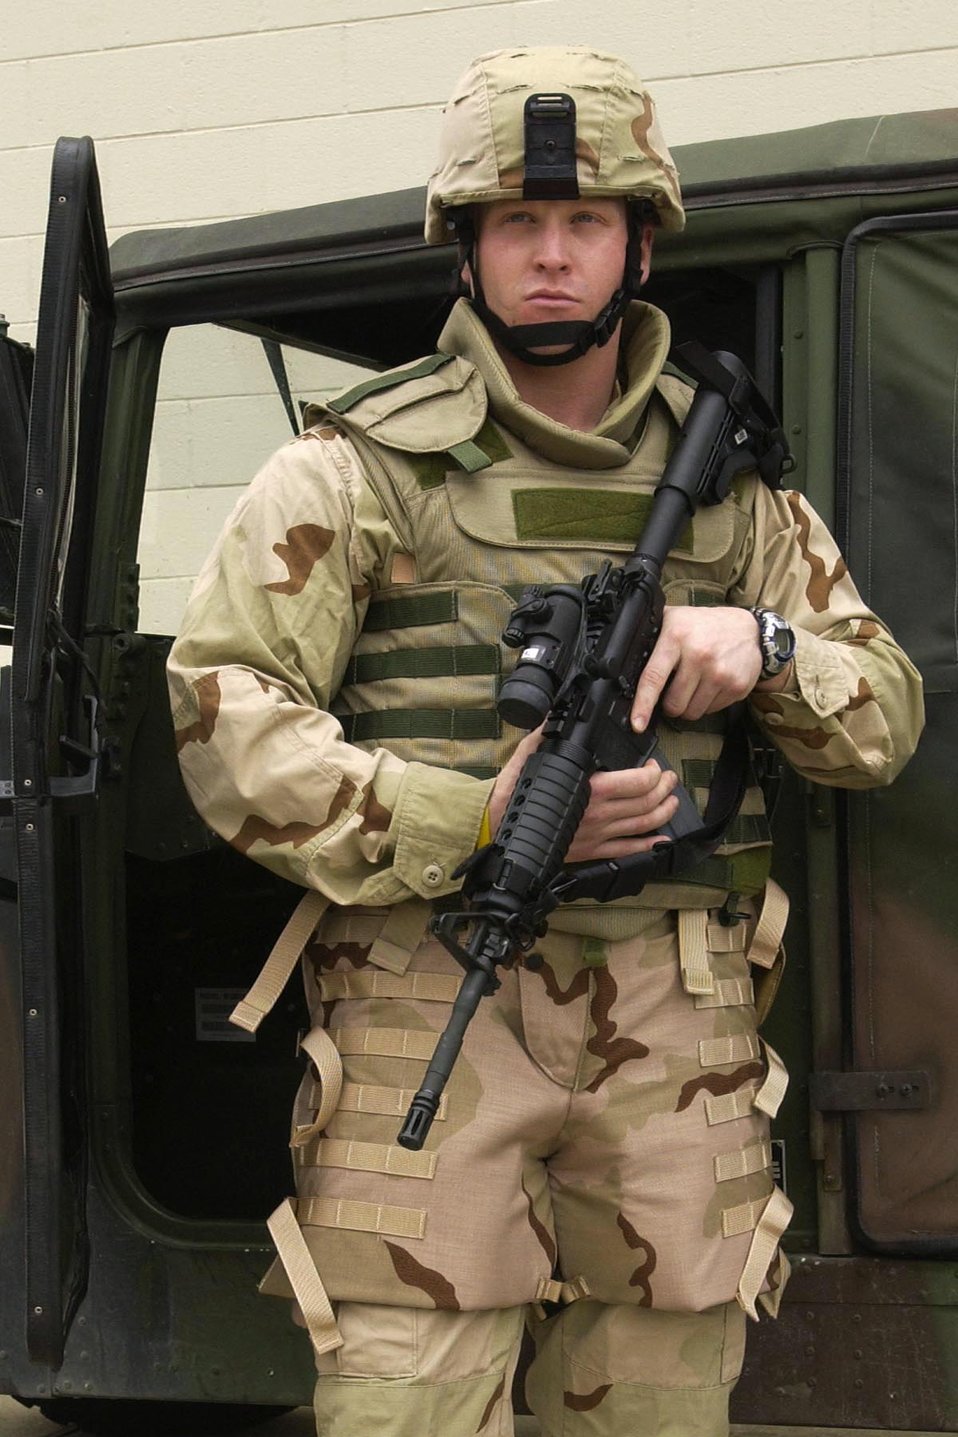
Langley Airmen test Kevlar shorts

LANGLEY AIR FORCE BASE, Va. -- Second Lt. Wendell Morgan wears protective Kevlar shorts being tested by the Air Force. The shorts minimize fragment damage from the waistline to the knees. Lieutenant Morgan is a flight officer with the 1st Security Forces Squadron.